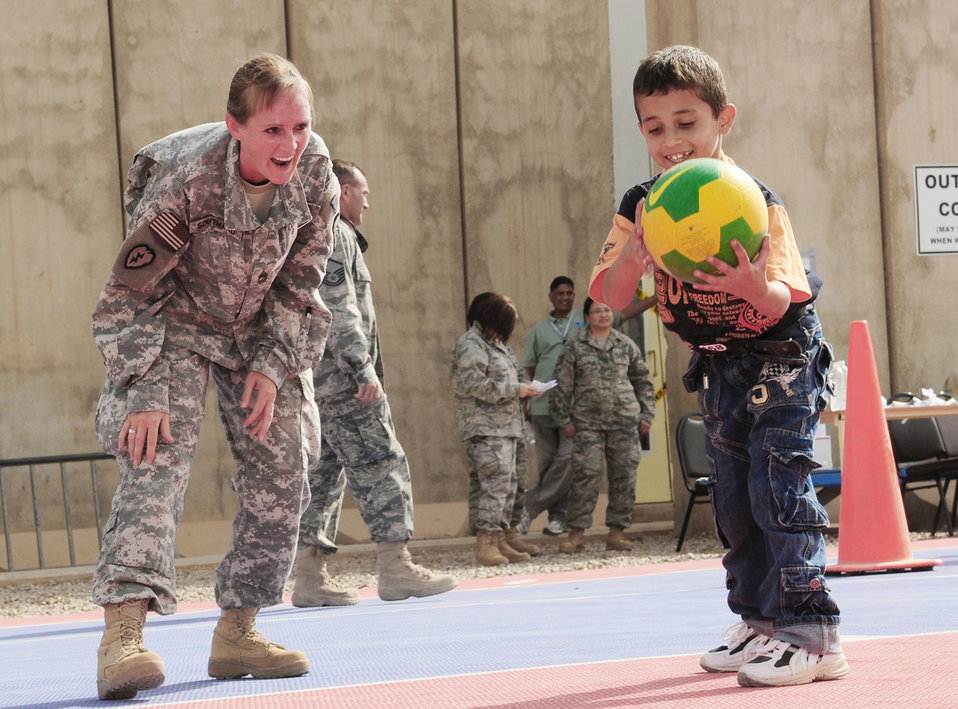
Iraqi children come out to play at Joint Base Balad

Army Sgt. 1st Class Diana Southard plays basketball with an Iraqi child Oct. 10, 2009, at Joint Base Balad, Iraq. Sergeant Southard is the 23rd Ordnance Headquarters platoon sergeant.